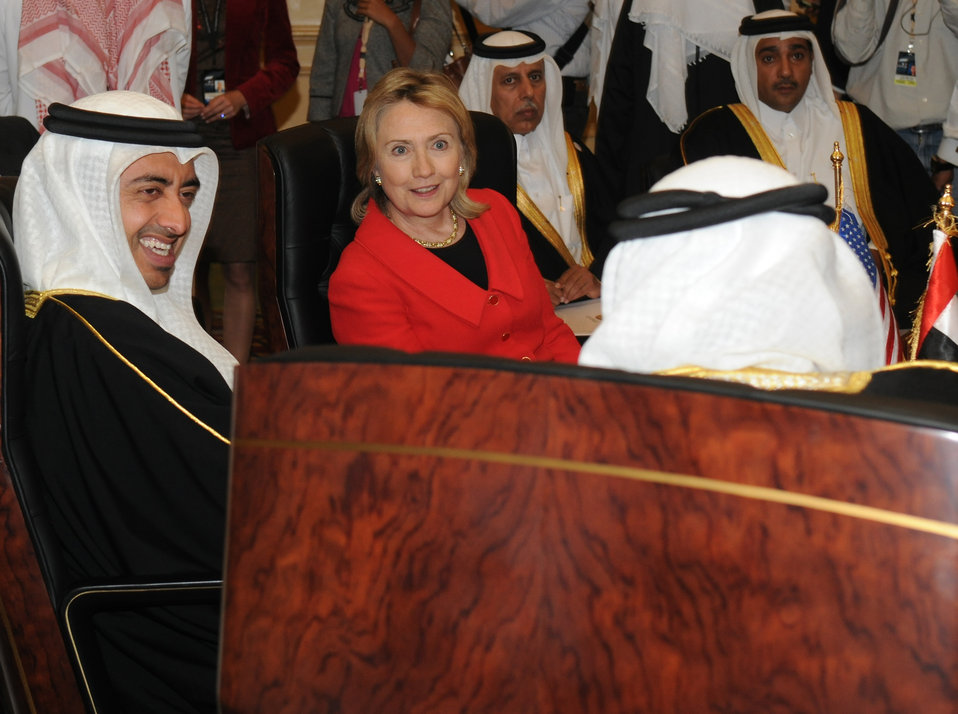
Secretary Clinton and UAE Foreign Minister Sheikh Abdullah bin Zayed al-Nahyan Laugh While Speaking to Another Foreign Minister

U.S. Secretary of State Hillary Rodham Clinton and United Arab Emirates Foreign Minister Sheikh Abdullah bin Zayed al-Nahyan laugh while speaking with another foreign minister before the start of a Gulf Cooperation Council roundtable meeting in Doha, Qatar, on January 12, 2010.